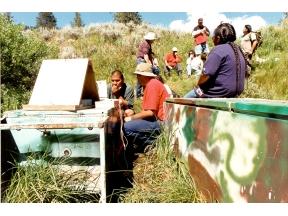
Shoshone Bannock students

Idaho National Engineering and Environmental Laboratory - Under a grant funded by the Office of Naval Research, Shoshone Bannock students, as well as other Native American students, about science and technology through the recovery of Salmon River. In this photo, students inspect two incubator boxes on the Yankee Fork of the Salmon River. The project is centered around the hatching of eggs and releasing salmon and steelhead. The Yankee Fork is a traditional salmon fishing area for the Shoshone Bannock Tribe.